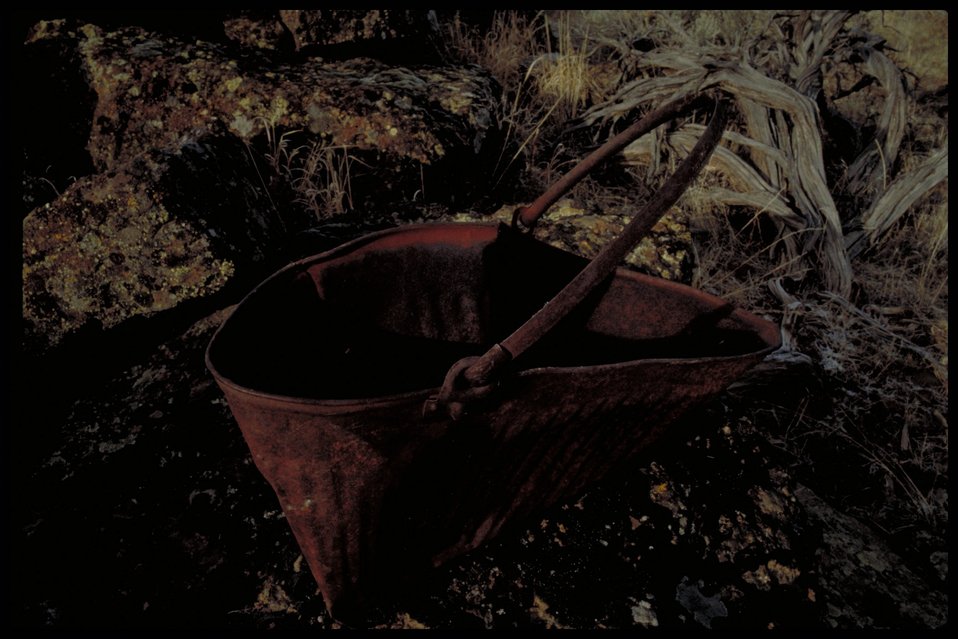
Coal bucket at Alkali Creek Oregon Trail Lower Snake River District